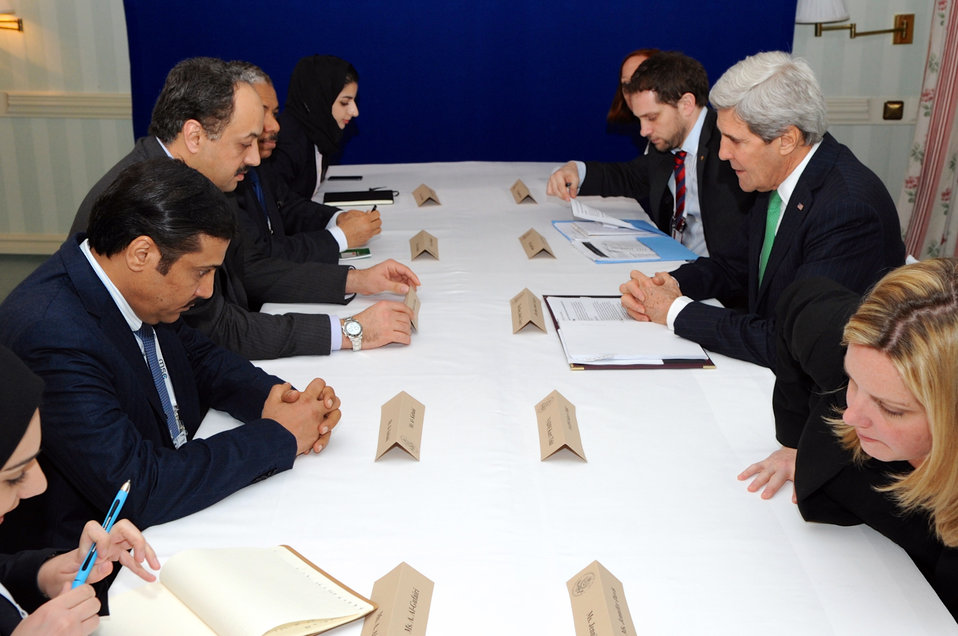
Secretary Kerry Meets With Qatari Foreign Minister al-Attiyah

U.S. Secretary of State John Kerry, Qatari Foreign Minister Khalid al-Attiyah, and their respective staffs begin a bilateral meeting on the margins of the Munich Security Conference in Munich, Germany on February 1, 2014.